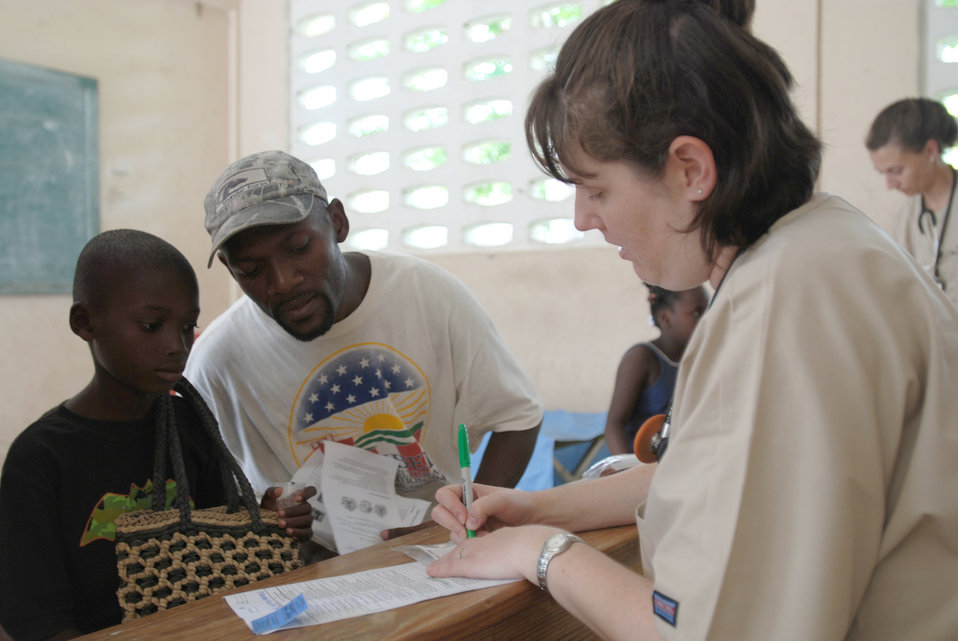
56th Medical Group Airmen provide medical support

Maj. Teresa Stump gives patients instructions on how to take their medication at the U.S. Army South New Horizons-Haiti 2010 Ennery medical assistance site July 13, 2010, in Mandrin, Haiti. Major Stump is a physician with the 56th Medical Group.